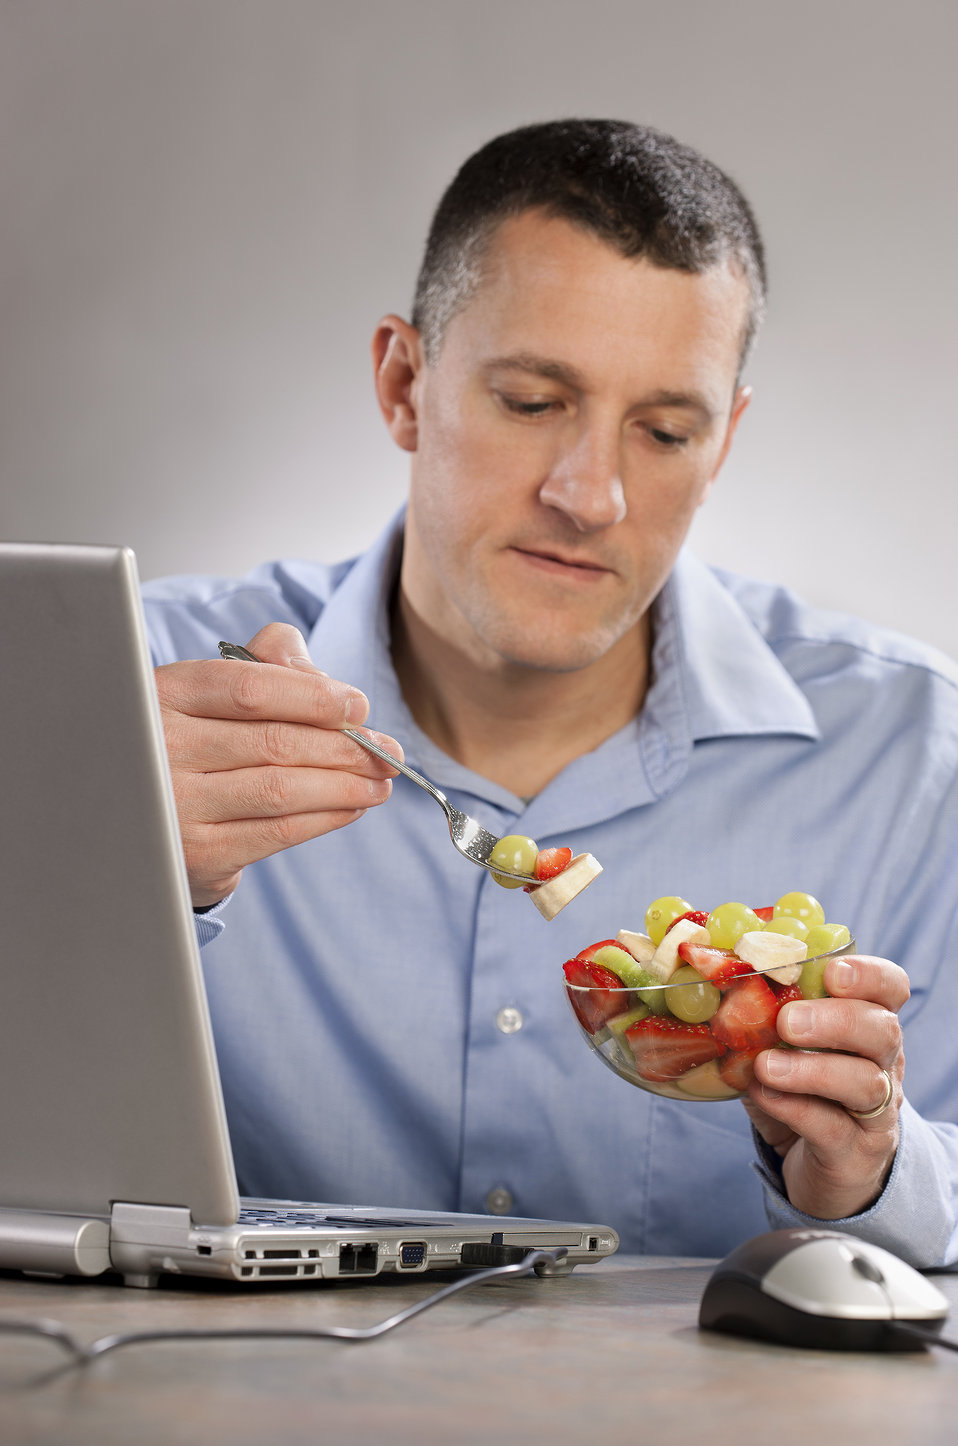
A man eats fruit at his workstation on May 22, 2003. Men should get 2 to 2.5 servings of fruit daily, but most men are getting only slightly over 1 serving a day, according to survey data analyses.